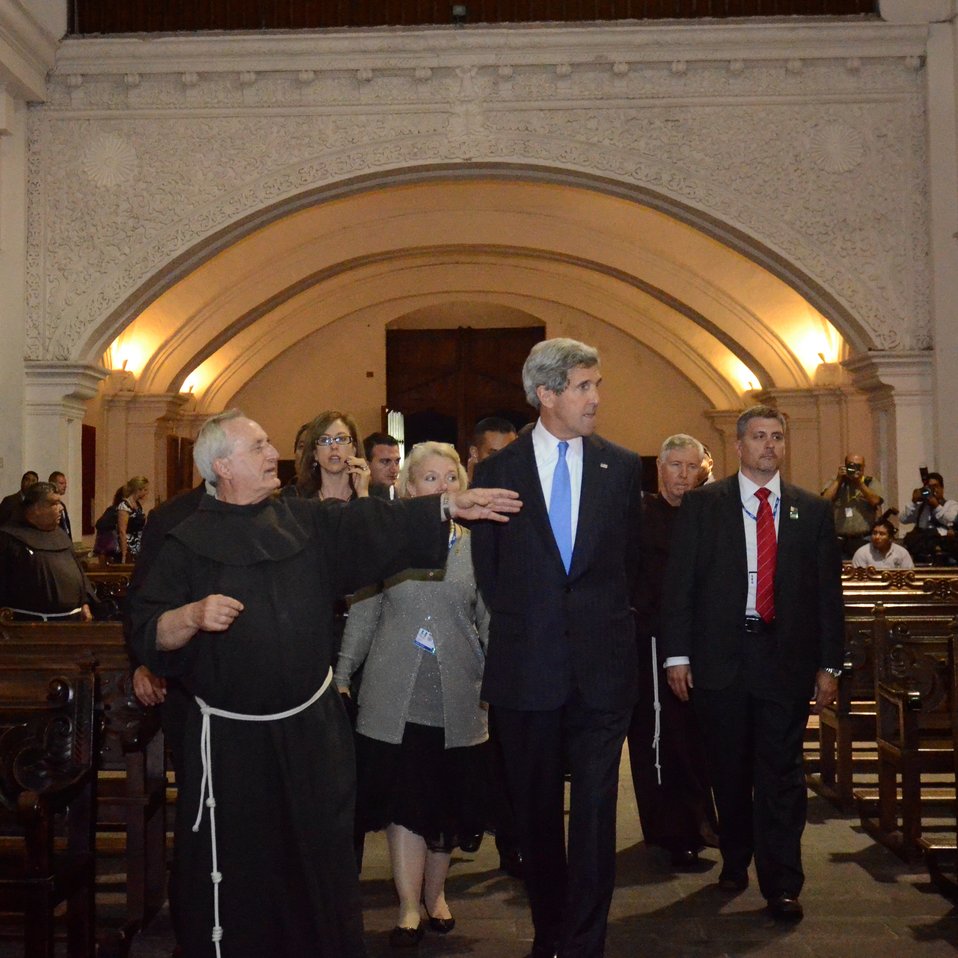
Secretary Kerry Tours the San Francisco Church

U.S. Secretary of State John Kerry tours the San Francisco Church in Antigua, Guatemala, on June 4, 2013.